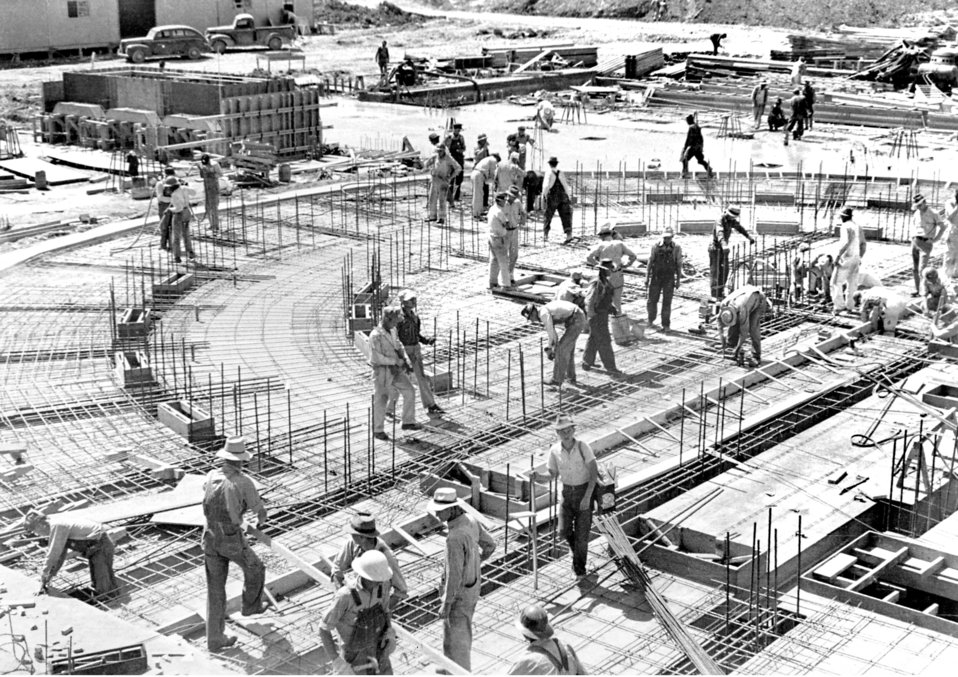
Early Construction Work Y-12 Oak Ridge 1943

roll 23-15 DOE photo Ed Westcott 5-18-1943 Oak Ridge Tennessee